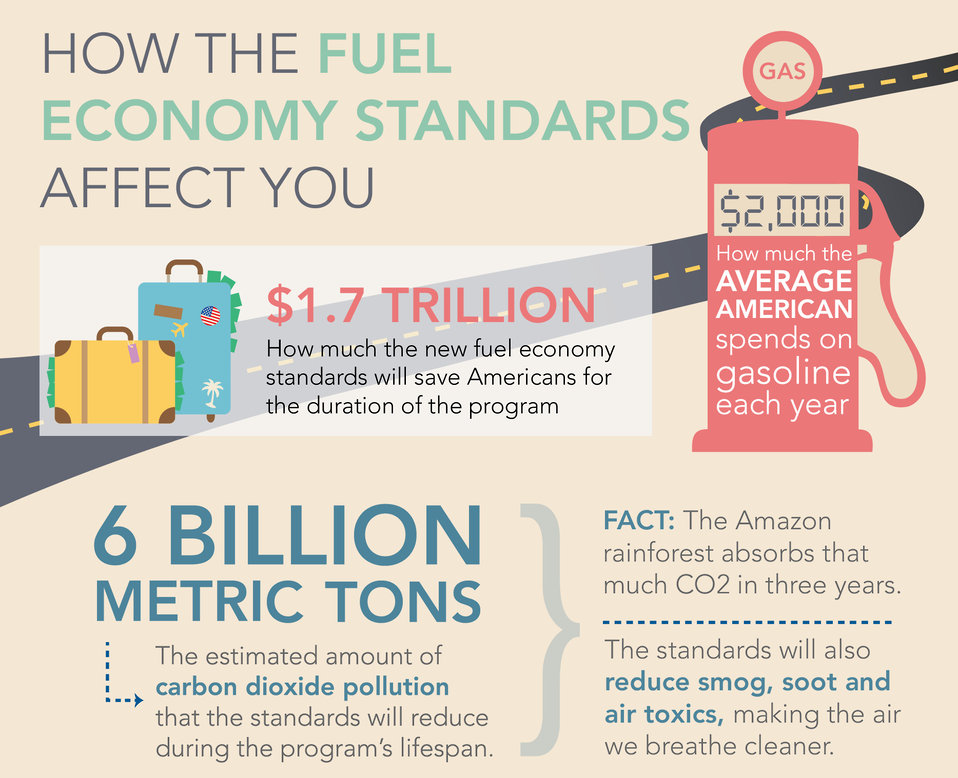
Infographic: The Road to Fuel Efficiency

Slide 2